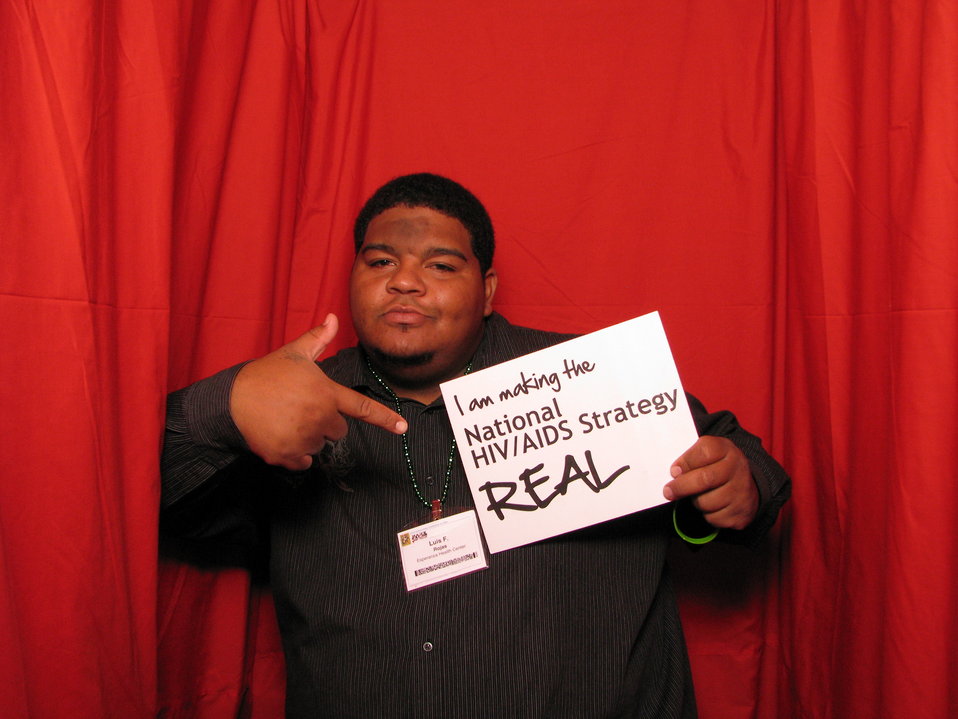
I am Making the National HIV/AIDS Strategy REAL

From the AIDS.gov photo booth at the U.S. Conference on AIDS, September 2010 (Orlando, FL).